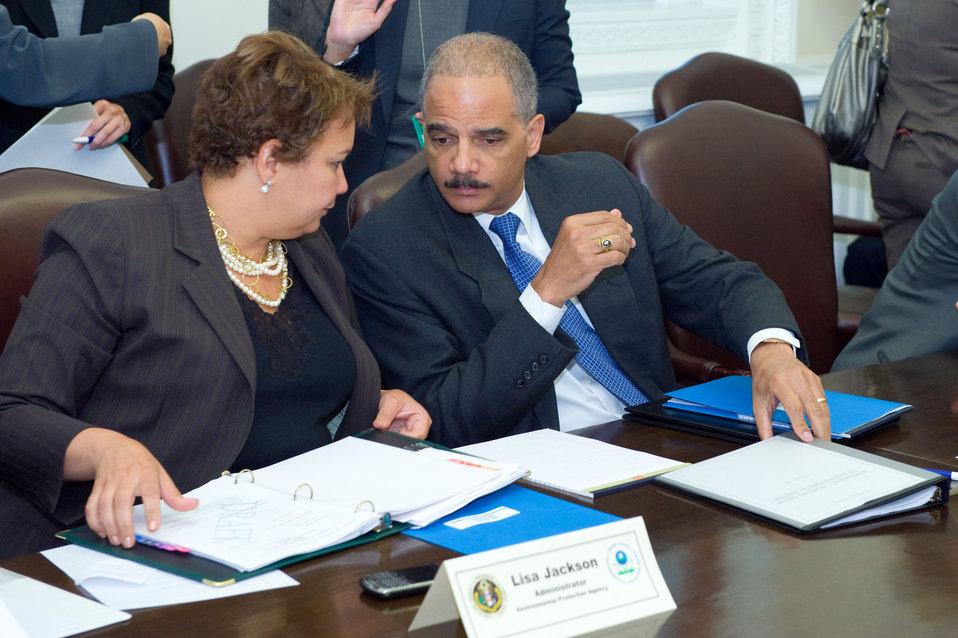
EPA Hosts Historic Meeting on Environmental Justice

Lisa P. Jackson, Administrator, Environmental Protection Agency, Eric Holder, Attorney General.

Read more about this historic meeting

Learn more about EPA